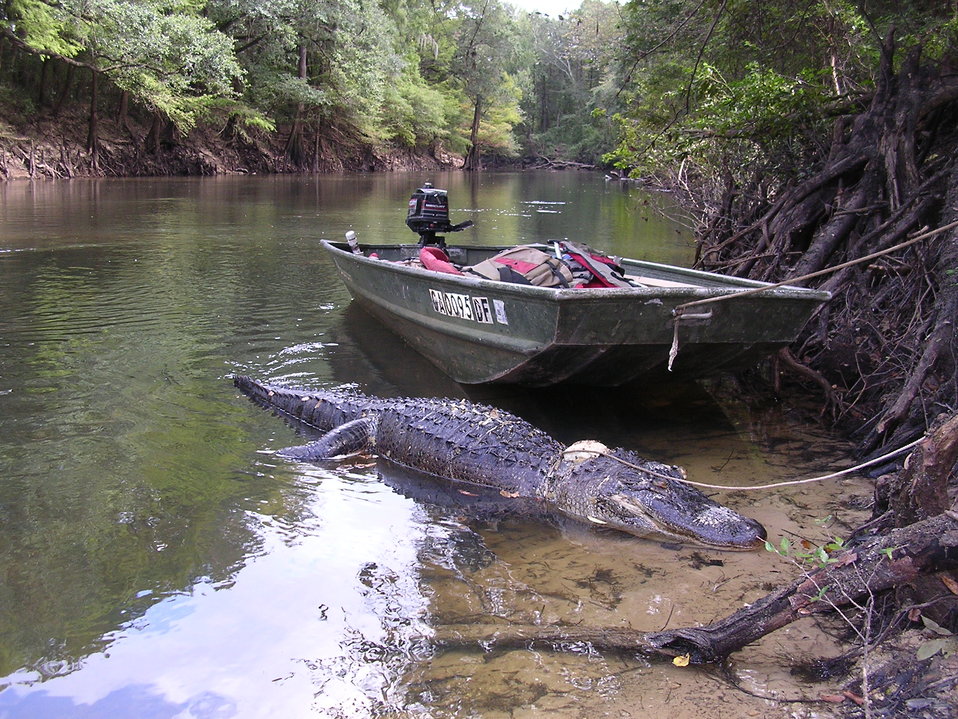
Alligator w/ transmitter--mortality.